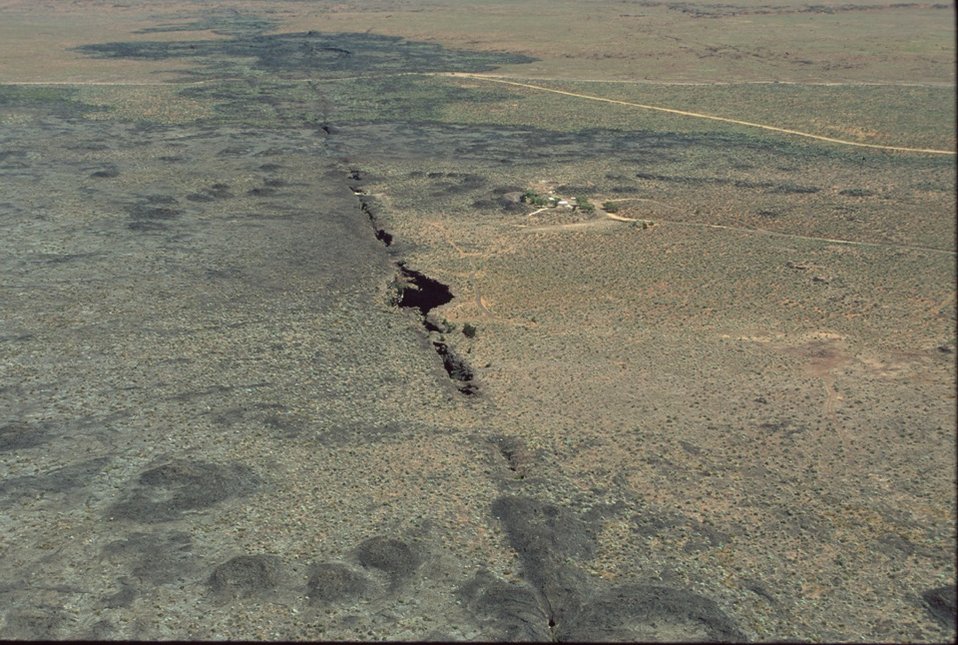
Shoshone Field Office USRD Upper Snake River District